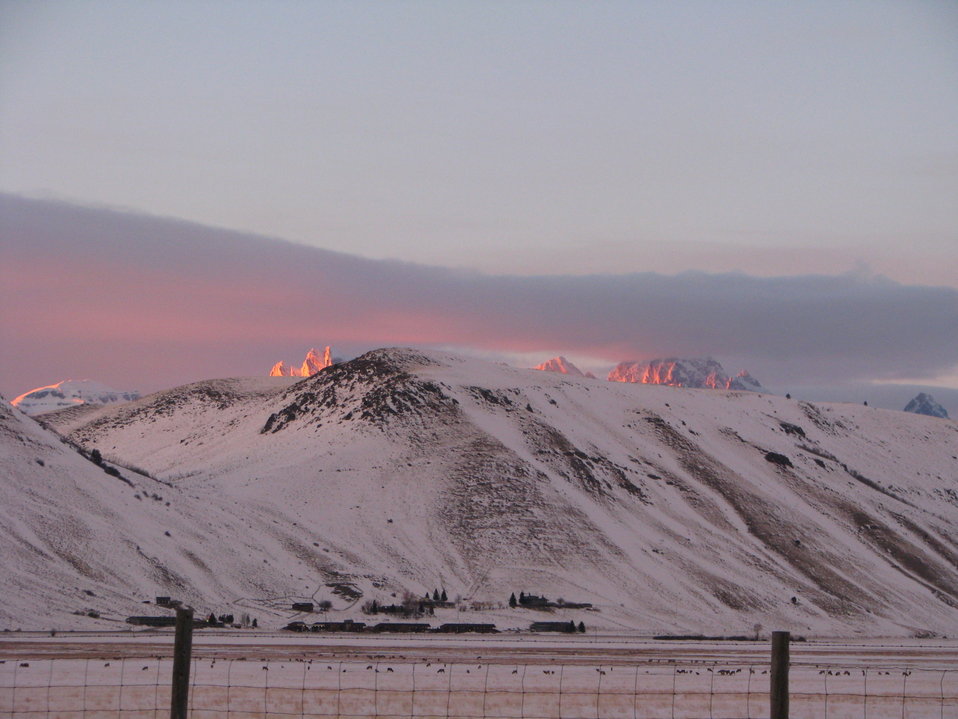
Calling It a Day

The view from the National Elk Refuge's administrative offices at the end of a January work day. The dramatic peaks of the Teton Range, bathed in alpenglow, peer over the top of East Gros Ventre Butte through a bank of clouds.